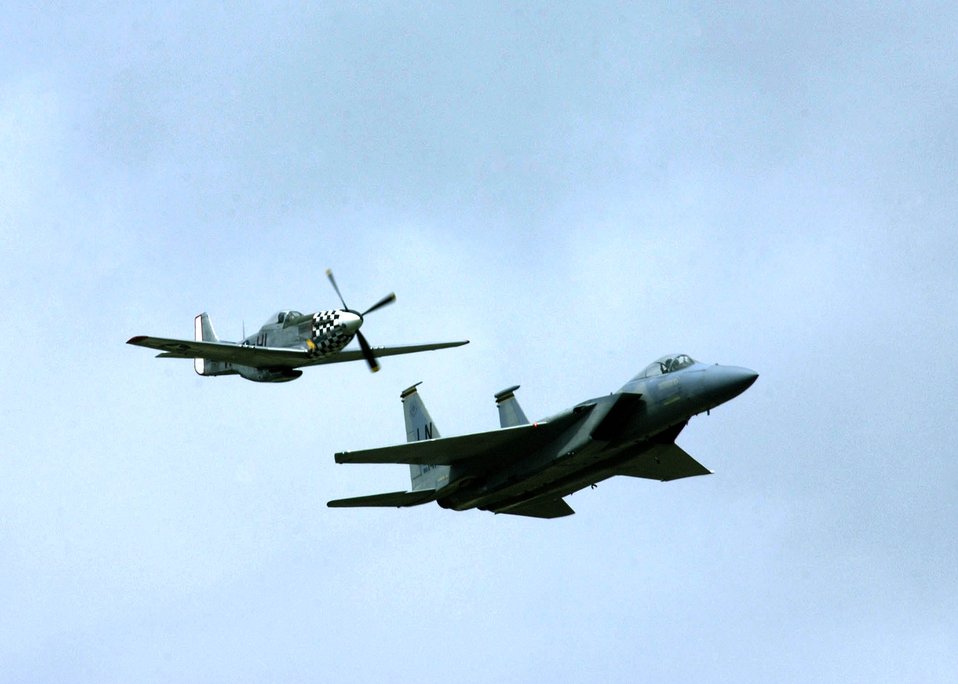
A revealing tattoo

OVER ROYAL AIR FORCE FAIRFORD, England -- A 48th Fighter Wing F-15 Eagle from Royal Air Force Lakenheath soars with its predecessor, the P-51 Mustang, during the Royal International Air Tattoo here July 16 to 18. More than 100,000 people visited the air show daily to see 350 aircraft from 15 nations and 30 different service branches.